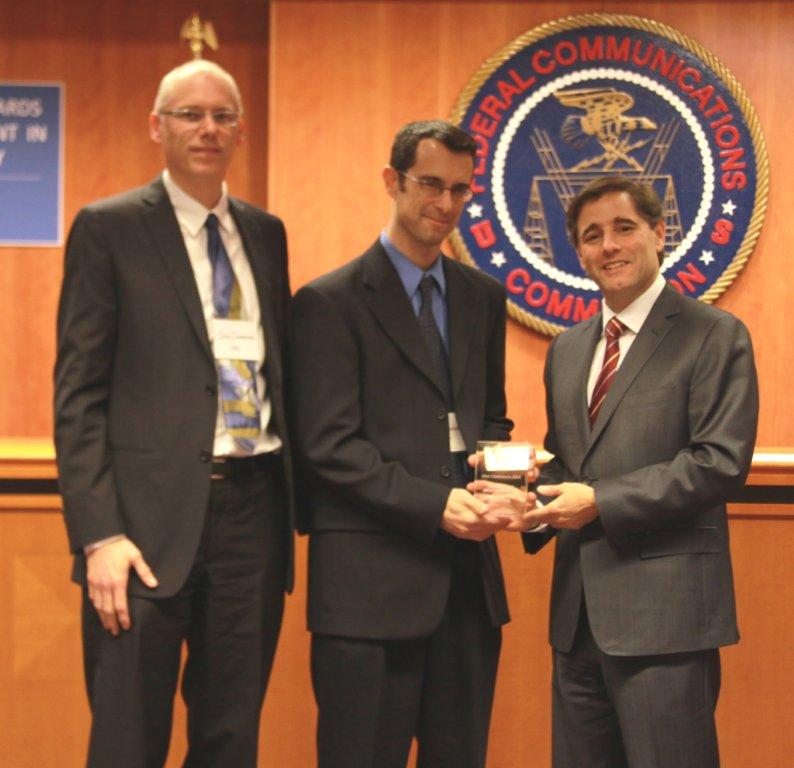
Aaron Steinfeld and John Zimmerman, Tiramisu Transit, Accept Geo-location Solutions Award

Aaron Steinfeld & John Zimmerman, accept Geo-location Solutions award from Chairman Genachowski for Tiramisu Transit.